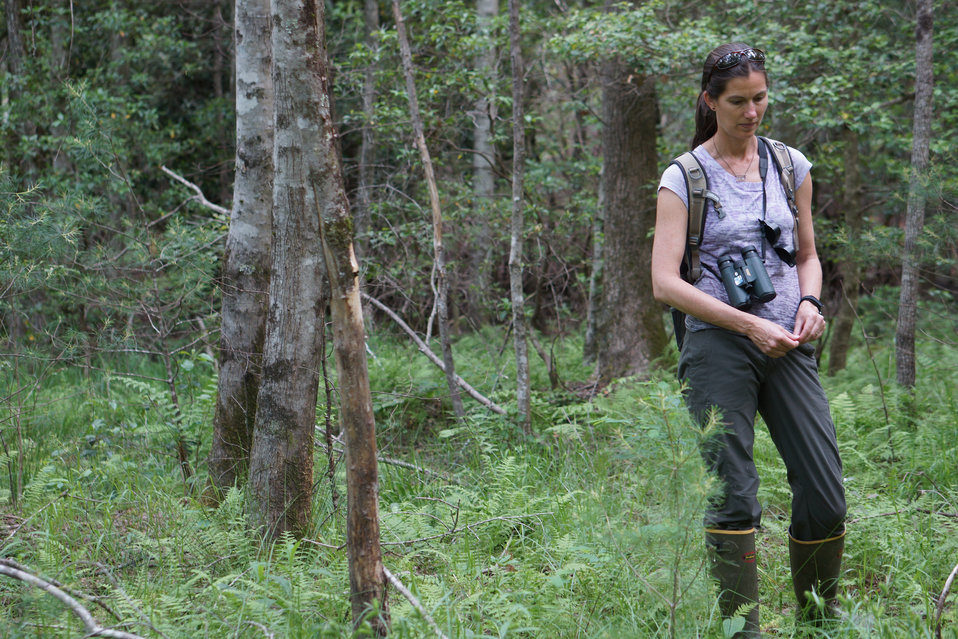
Sue Cameron hiking through a bog

In May, bog conservationists from Tennessee, North Carolina, and Georgia convened in the north Georgia mountains for the spring, 2014 meeting of the Bog Learning Network. The event provided an opportunity for biologists to see, first hand, the result of management efforts at two north Georgia bogs. More importantly, the outings provided an opportunity to share innovative approaches to bog management, such as the role of the Georgia Plant Conservation Alliance in conserving rare plants and coordinating a cadre of volunteers to work on bog management.

The Bog Learning Network was convened in the winter of 2013 as a way to bring together people working for bog conservation across the Southern Appalachians. Southern Appalachian bogs are one of North America’s rarest habitats and home to many rare plants and animals.